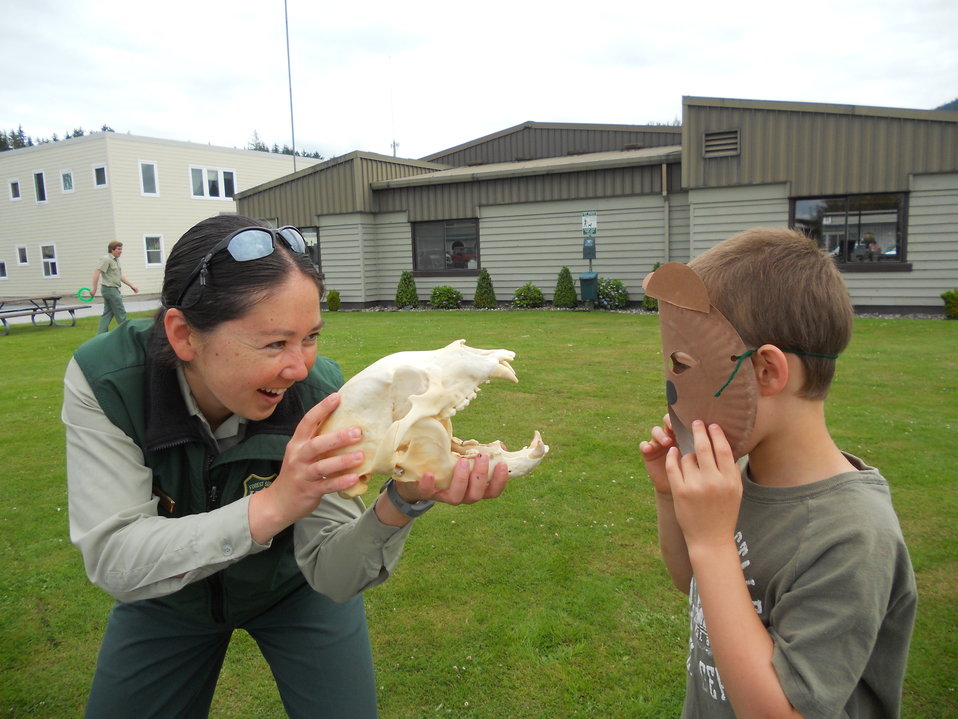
Corree Seward Delabrue photo 1

U.S. Forest Service district interpreter Coree Seward Delabrue teaches a youngster about the history of the Tongass National Forest in Alaska.